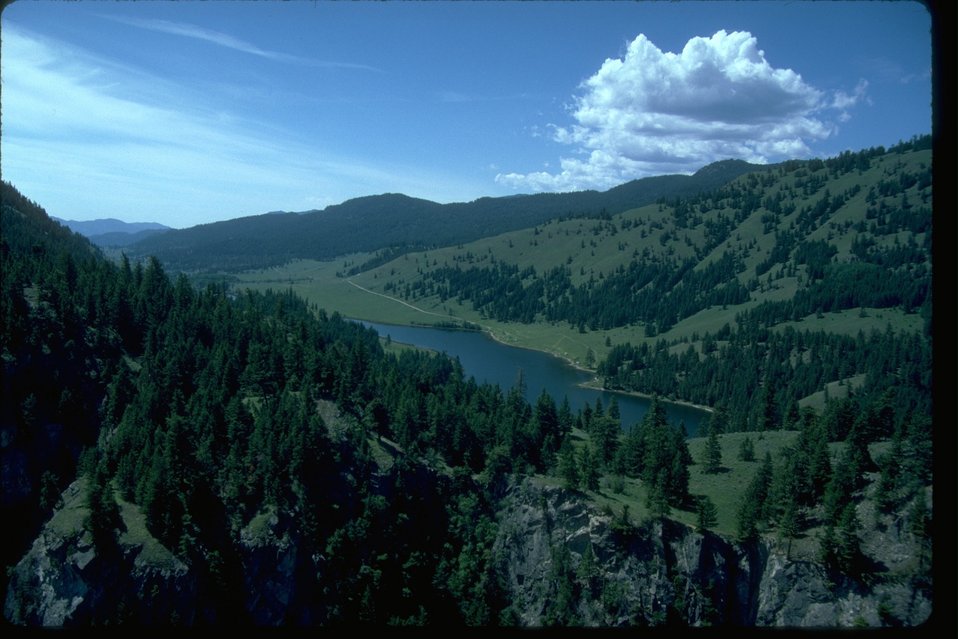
Chopaka Lake in Okanogan County, WA.